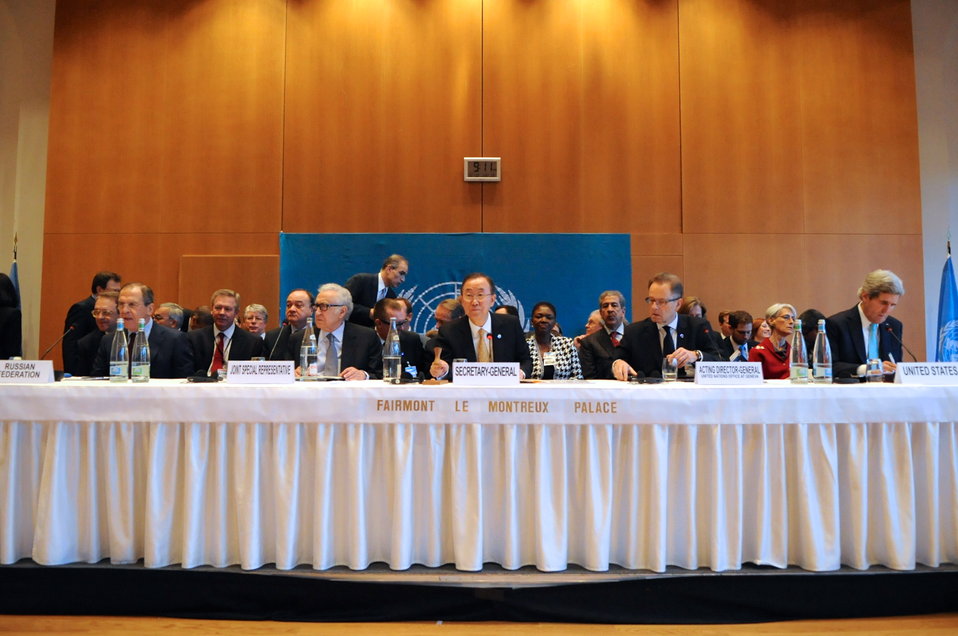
Secretary-General Ban Gavels Geneva II Conference to Order

United Nations Secretary-General Ban Ki-moon, flanked by Russian Foreign Minister Sergey Lavrov and U.S. Secretary of State John Kerry, gavels open the Geneva II conference in Montreux, Switzerland, on January 22, 2014.